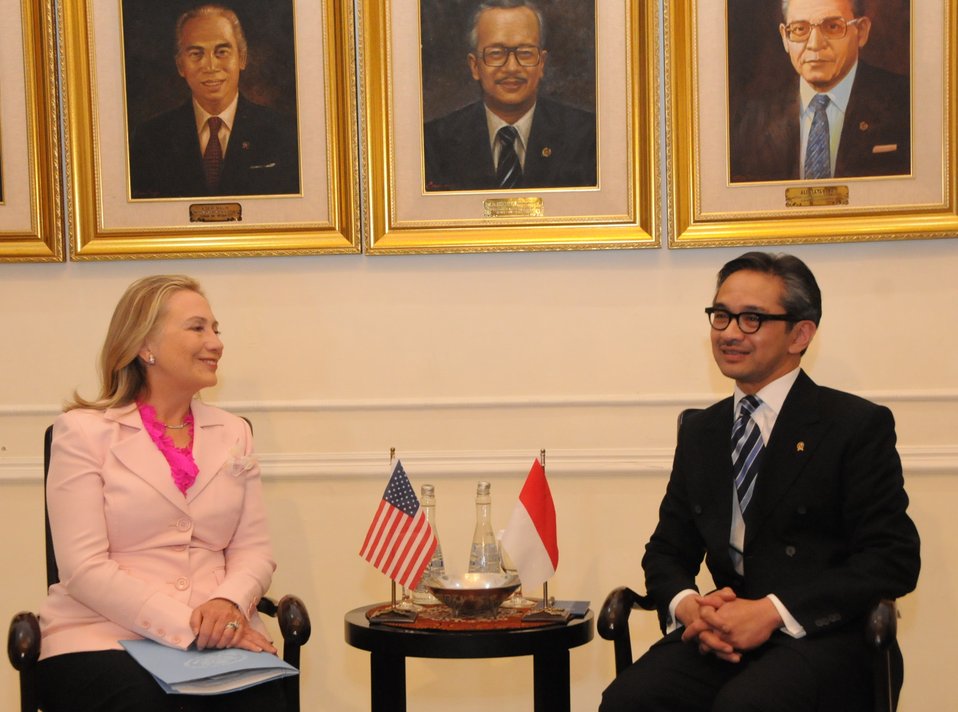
Secretary Clinton With Foreign Minister Natalegawa in Indonesia

U.S. Secretary of State Hillary Rodham Clinton meets with Indonesian Foreign Minister Raden Mohammad Marty Muliana Natalegawa during a press conference after their meeting in Jakarta, Indonesia, September 3, 2012.